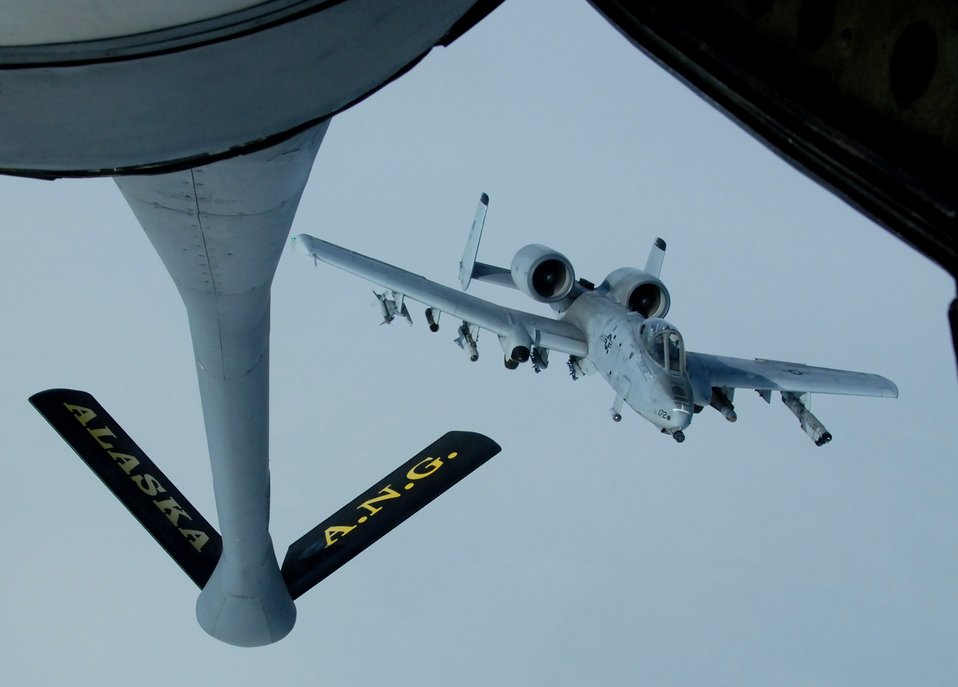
Time to get gas

Capt. Oliver Rick moves his A-10 Thunderbolt II into position behind a KC-135 Stratotanker April 4 over the Pacific Alaska Range Complex. Captain Rick, a 355th Fighter Squadron pilot from Eielson Air Force Base, Alaska, was participating in a live-fire exercise.